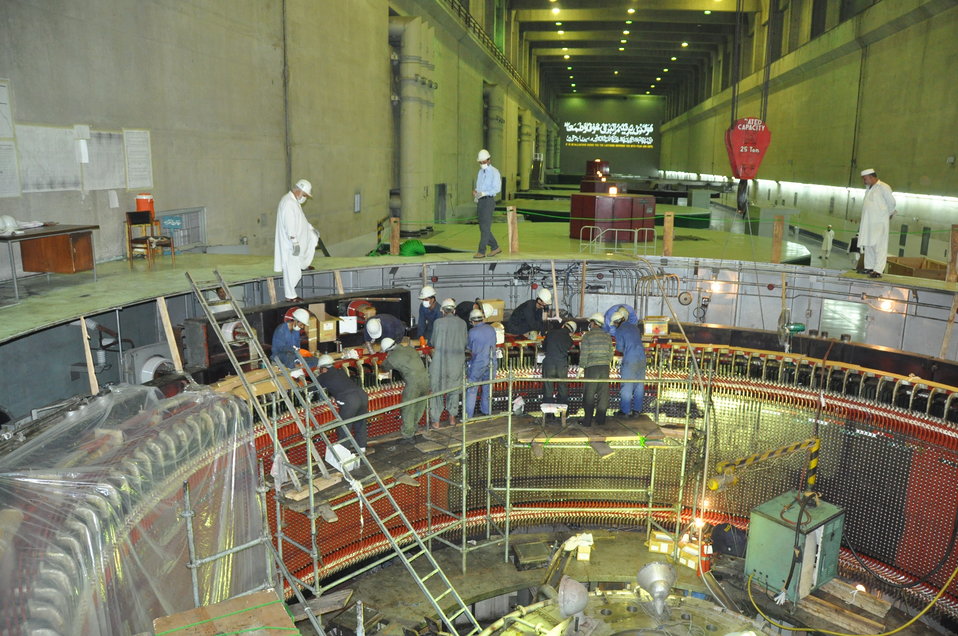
As part of the U.S. government's long-term commitment to improve energy supply in the country, USAID is supporting the completion of several high-impact energy sector projects in Pakistan. USAID is modernizing three generators in Tarbela Dam. In addition, we are helping construct Satpara Dam, providing support to Gomal Zam Dam, and upgrading the thermal plants at Jamshoro, Guddu, and Muzaffargarh. USAID is also partnering with the Government of Pakistan to reduce inefficiencies in the use of electricity and reform the sector so that it can grow with the economy and pay for regular maintenance.